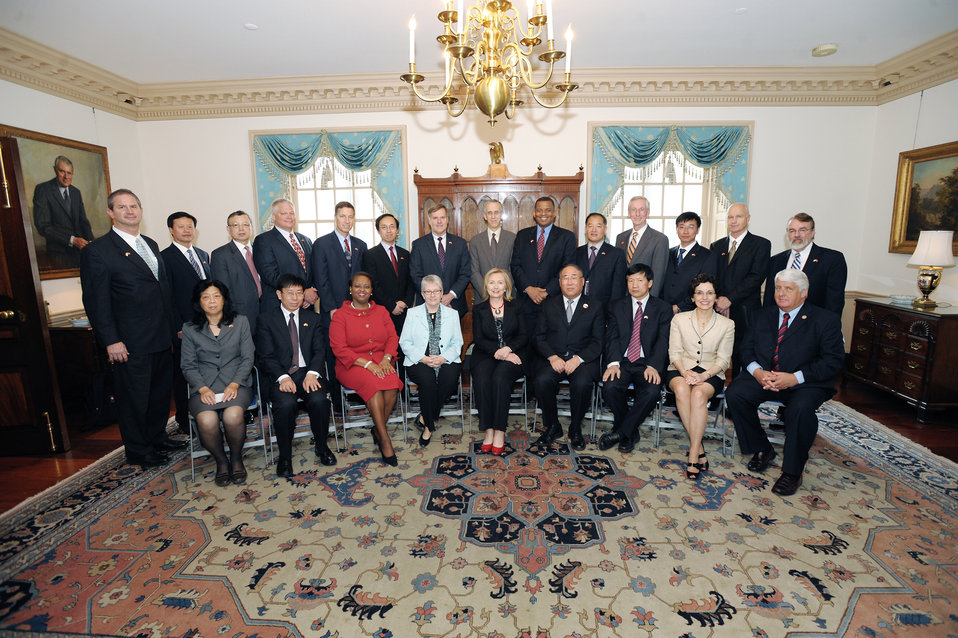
Secretary Clinton Poses for a Photo With Members of the U.S.-China Delegation

U.S. Secretary of State Hillary Rodham Clinton poses for a photo with members of the U.S.-China delegation after the U.S.-China EcoPartnerships Signing Ceremony, at the U.S. Department of State in Washington, D.C., on May 10, 2011.